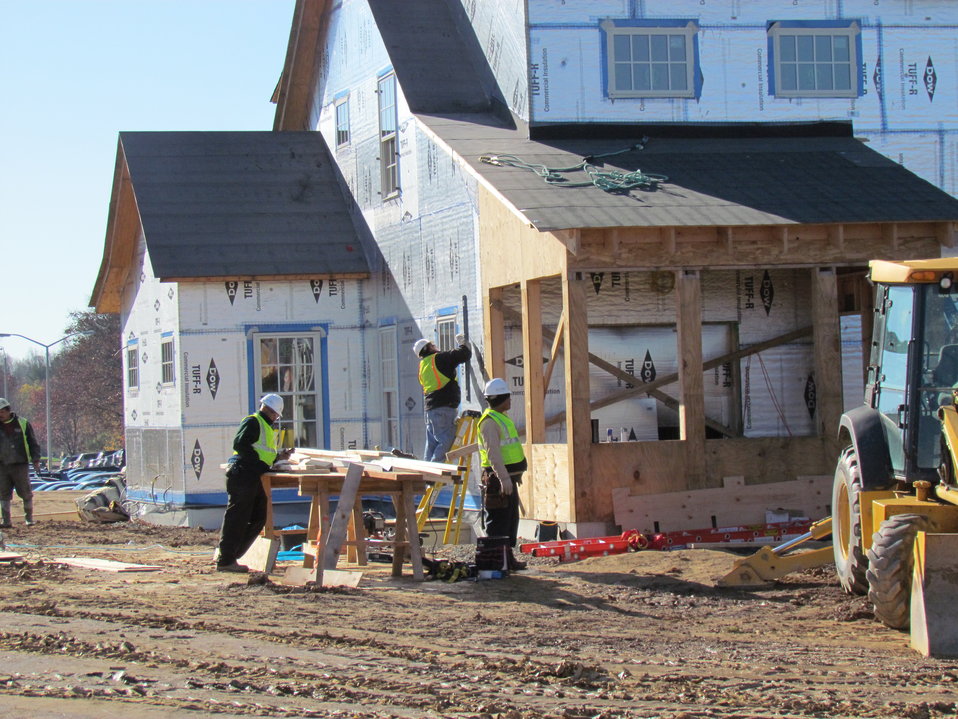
Net-Zero Energy Residential Test Facility - Photo showing framing of attached rear porch.